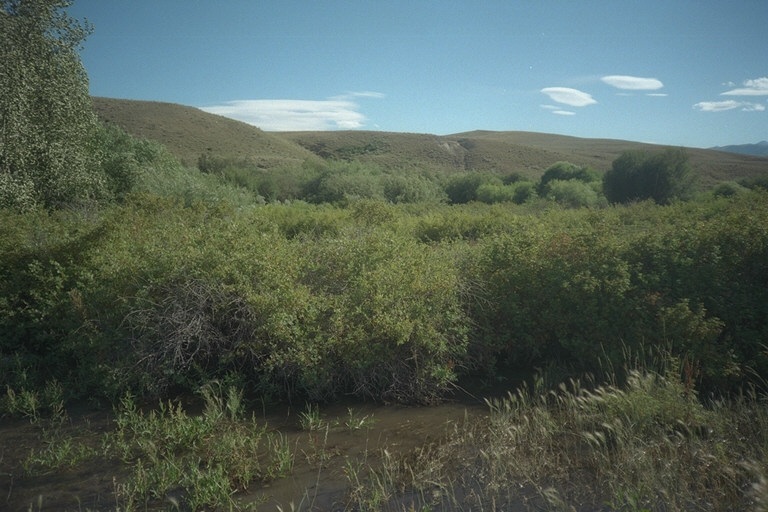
Riparian area Public Lands Salmon Field Office UCSC Upper Columbia Salmon Clearwater District